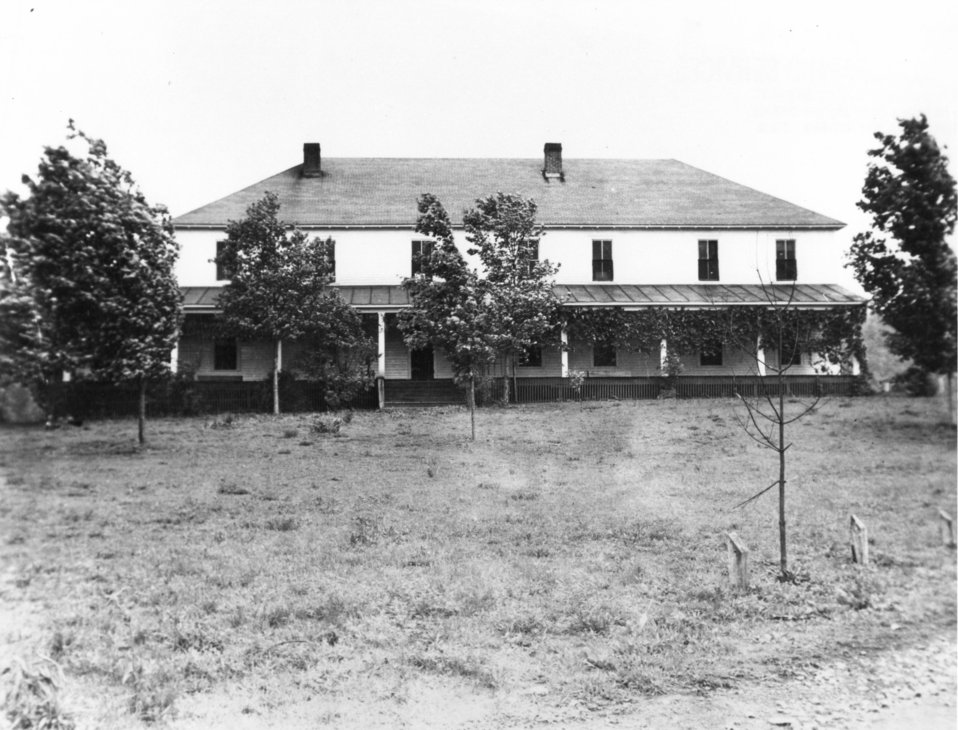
Early settlers at Oak Ridge